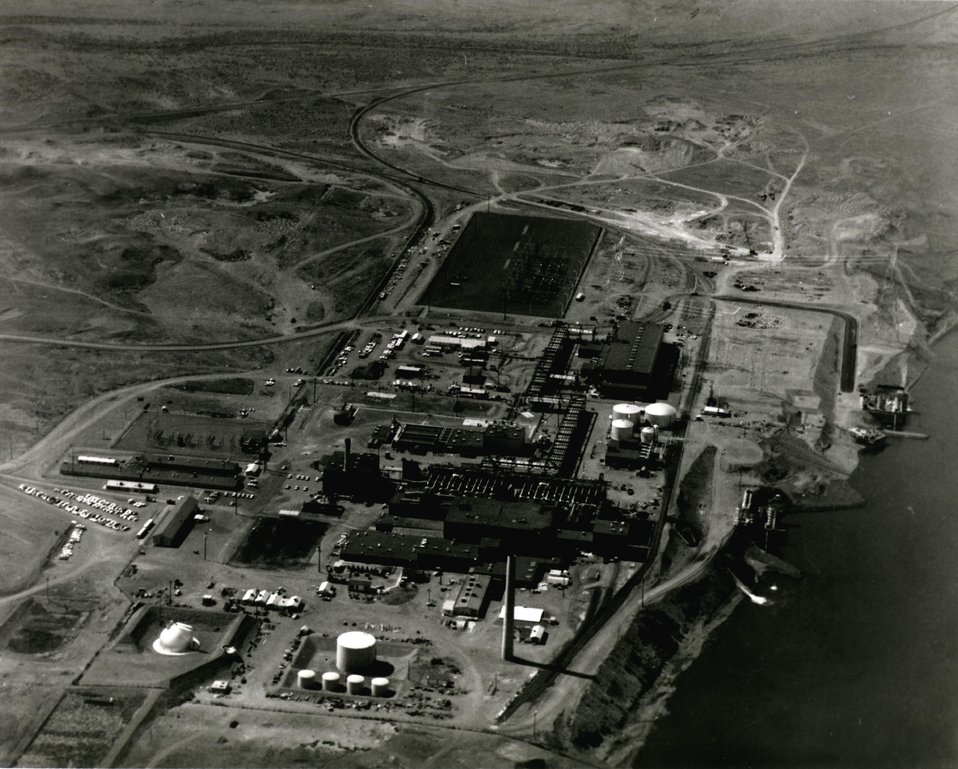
The world largest dual-purpose nuclear facility, at the Atomic Energy Commission's Hanford Project, is shown in this aerial picture, N Reactor. Circa 1968.